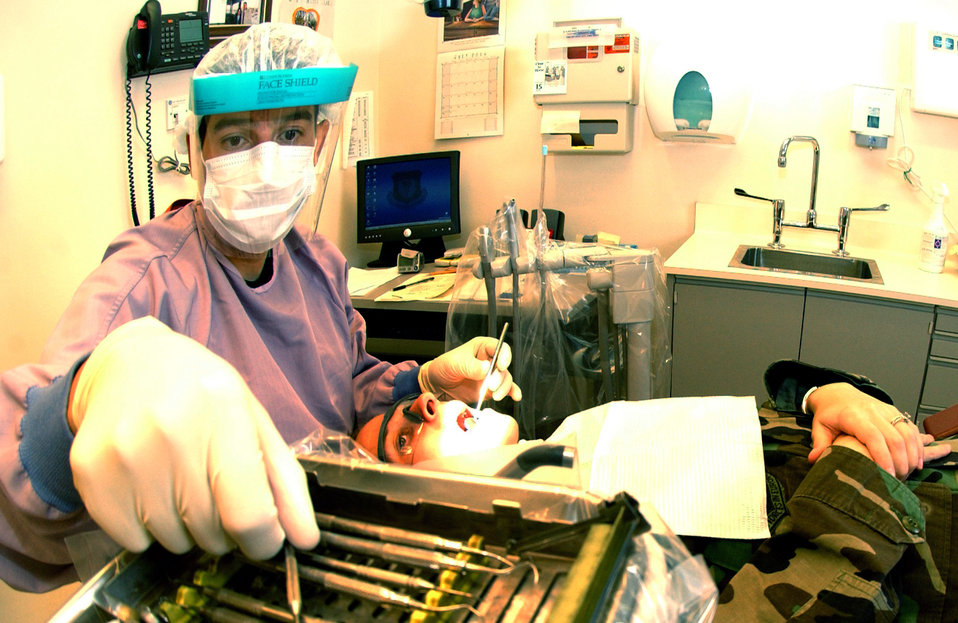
Dental details

Tech. Sgt. Dennis Leon conducts a periodic oral exam on Senior Airman Lauryn Hashem at Royal Air Force Lakenheath, England, on July 31. The exam includes a cleaning, scaling, polishing, flossing, fluoride treatment and instruction on proper oral hygiene. Sergeant Leon is the the NCO in charge of preventive dentistry for the 48th Dental Squadron. Airman Hashem is an aircrew life support journeyman for the 492nd Fighter Wing.